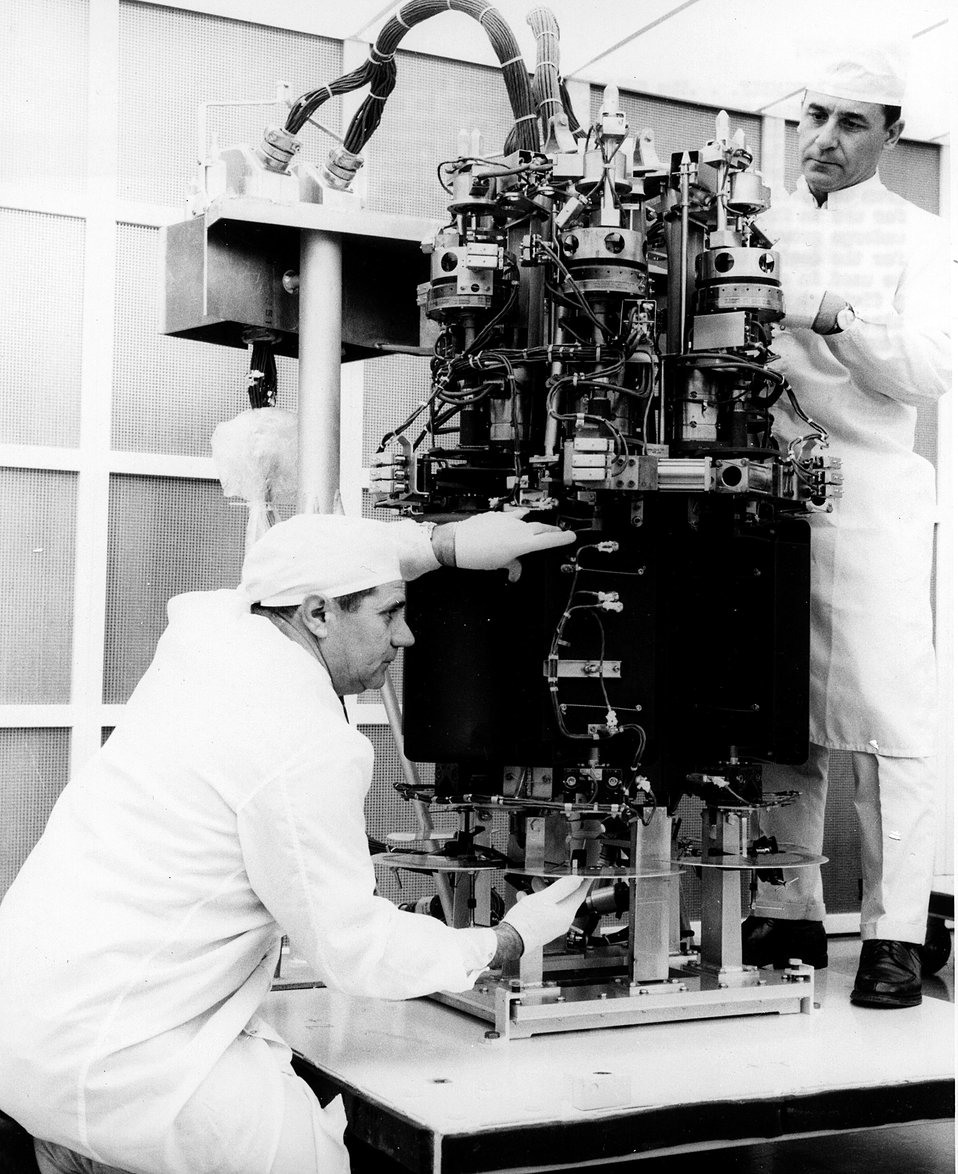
The SNAP 8DR prototype nears its end of assembly.